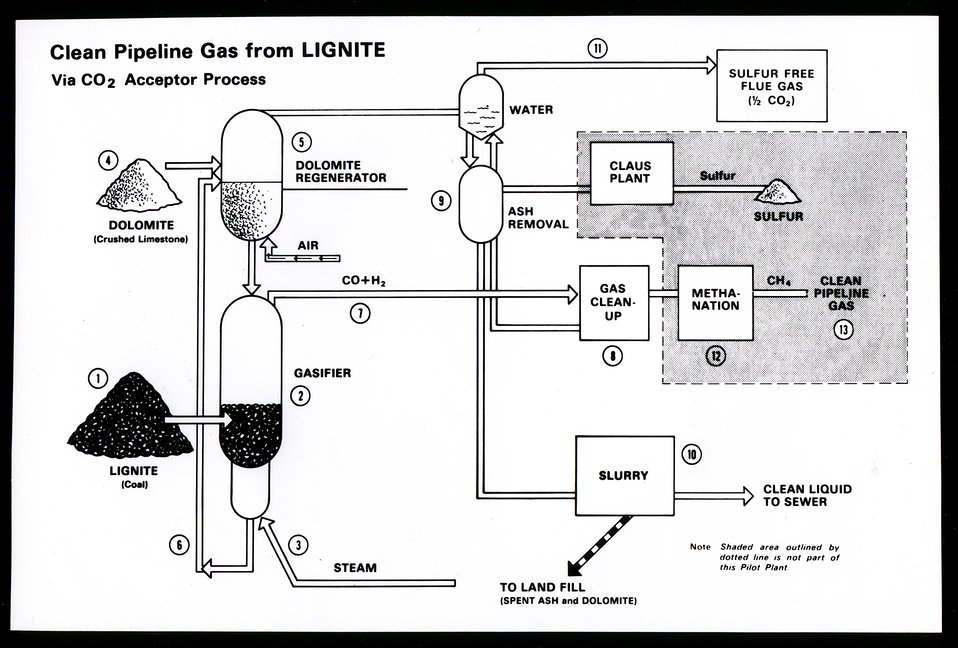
The coal gasification process developed by the Consolidation Coal Company is a significant technological advance in solids-to-gas conversion--both in the equipment and the method used to apply and sustain heat to the reactors to produce synthetic gas.